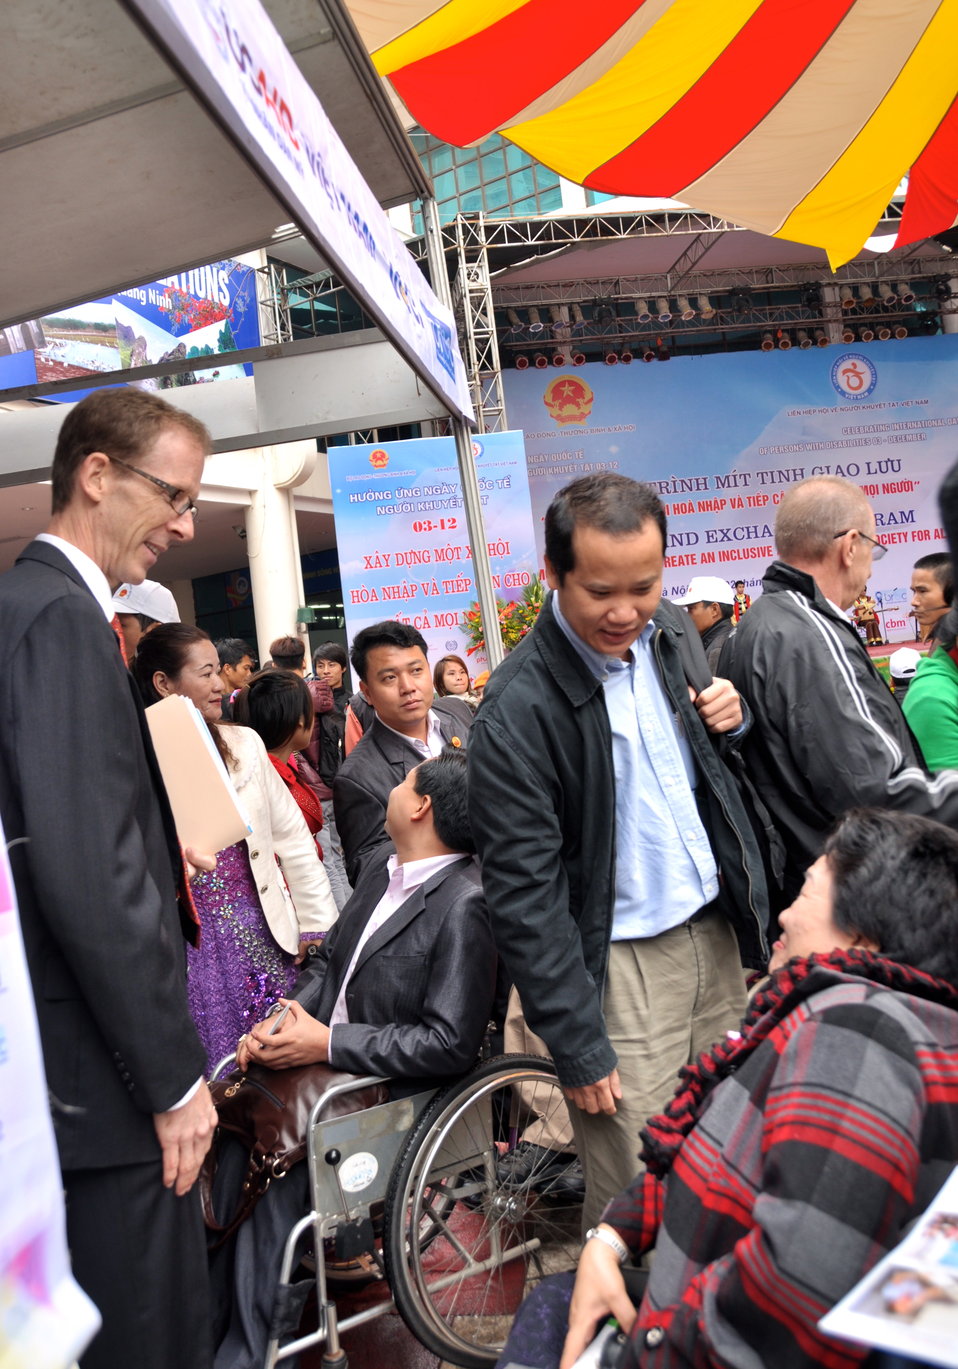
USAID Mission Director Joakim Parker joins celebration of International Day of Persons with Disabilities in Hanoi, Vietnam

December 2, 2012